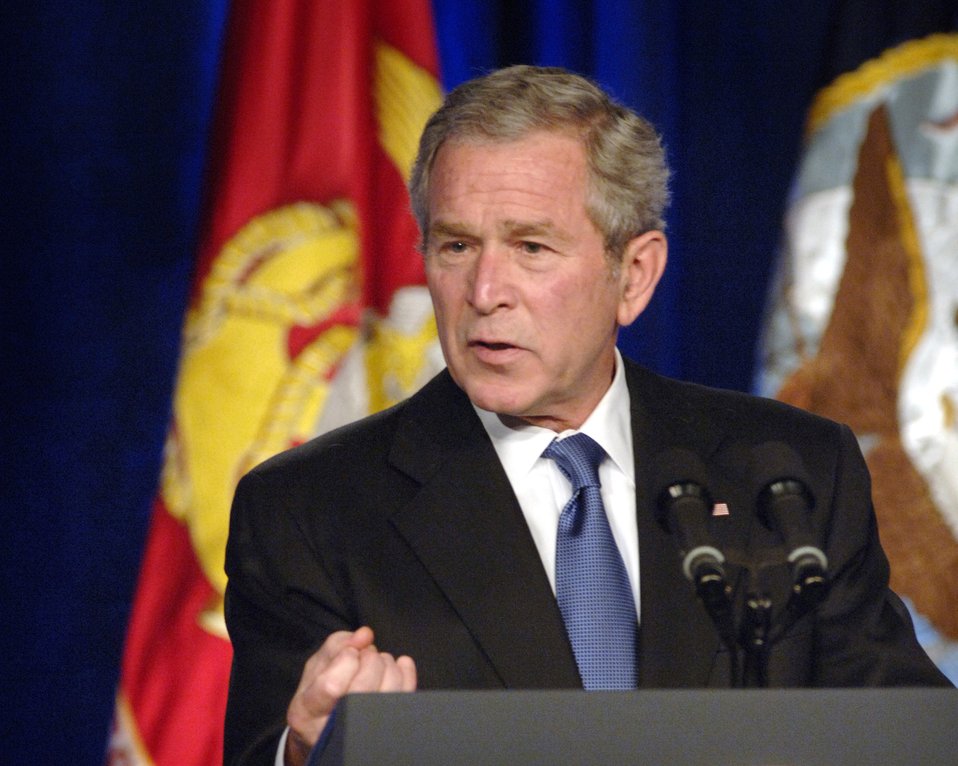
President honors Airmen, servicemembers

President George W. Bush delivers a speech at the Pentagon March 19 offering his views on the progress being made in the war on terrorism. The speech was timed to coincide with the 5th anniversary of the U.S.-led invasion of Iraq.